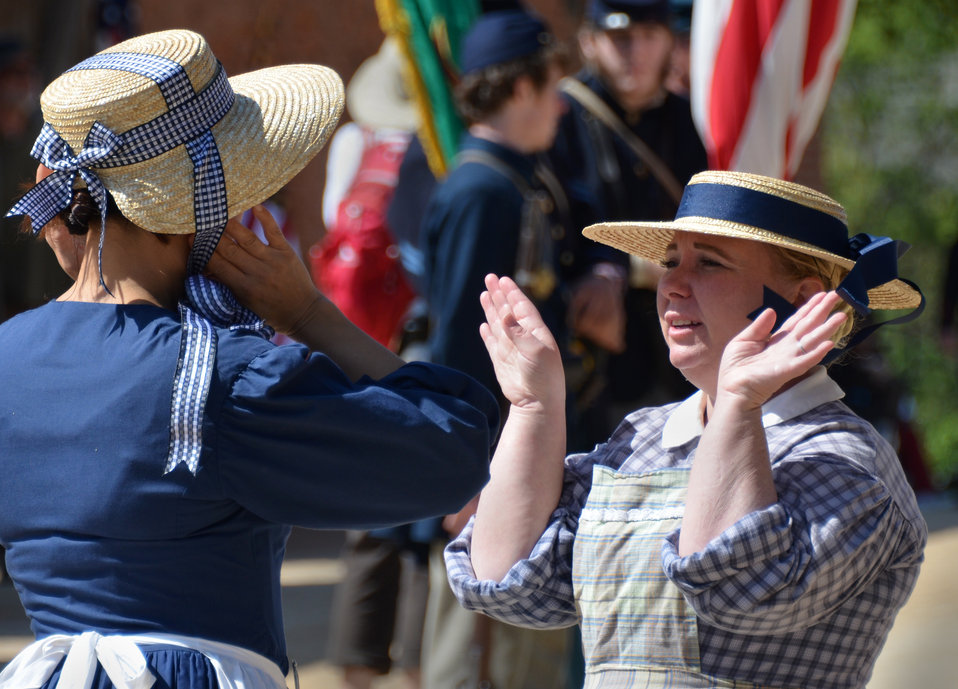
Historic weekend in Knights Ferry

Women in period costumes react to cannon fire during a Civil War reenactment at the U.S. Army Corps of Engineers Sacramento District’s Stanislaus River Parks in Knights Ferry, Calif., March 22, 2014. Sacramento District employees and hundreds of history buffs gathered in Knights Ferry to officially commemorate attaining National Historic Landmark status for the 300-foot-long covered bridge in the historic 19th-century township.